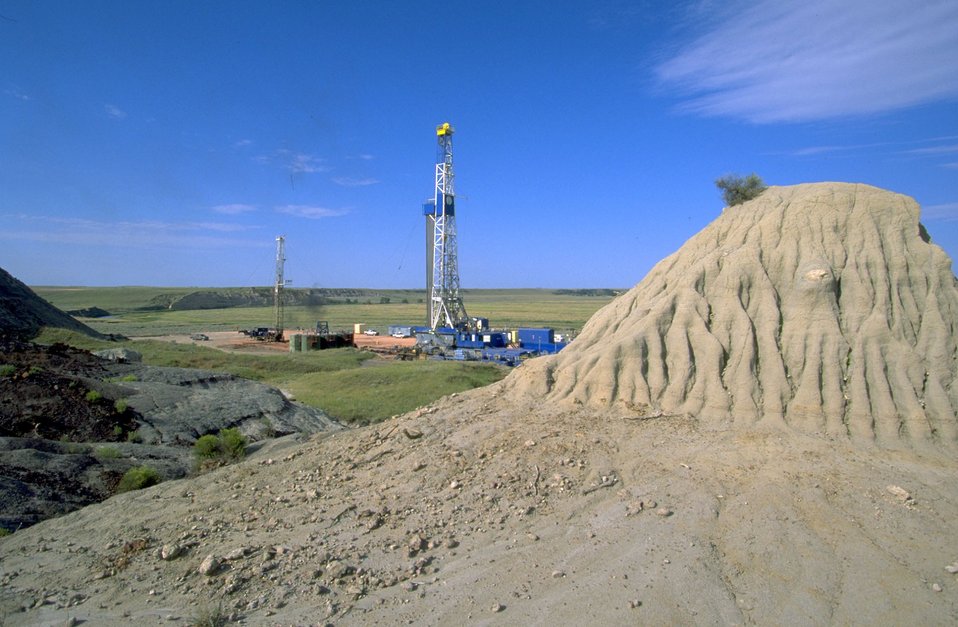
Drilling rig and workover rig on a single pad